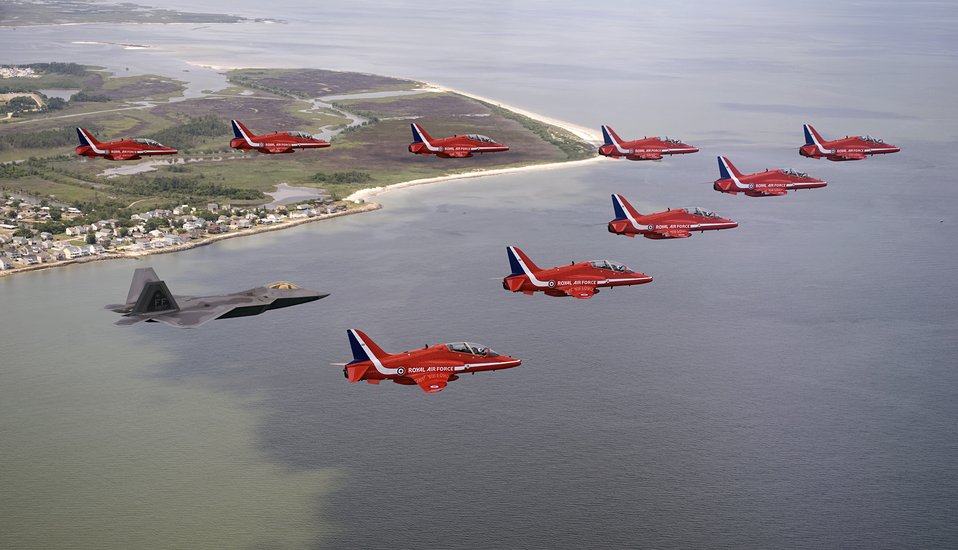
Red Arrows meet Raptor

An F-22 Raptor flies with British Royal Air Force aerobatic team, The Red Arrows, during a practice flight June 18 over Langley Air Force Base, Va., for an air show June 20.